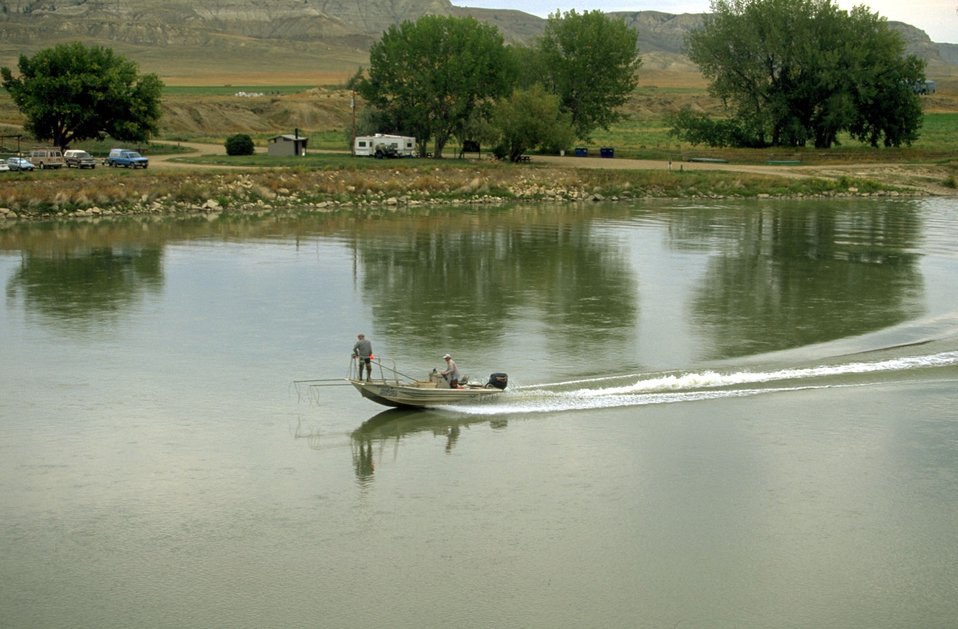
Judith Landing along the Upper Missouri National Wild and Scenic River with MT Dept of Fish Wildlife and Parks fish shocker boat in water